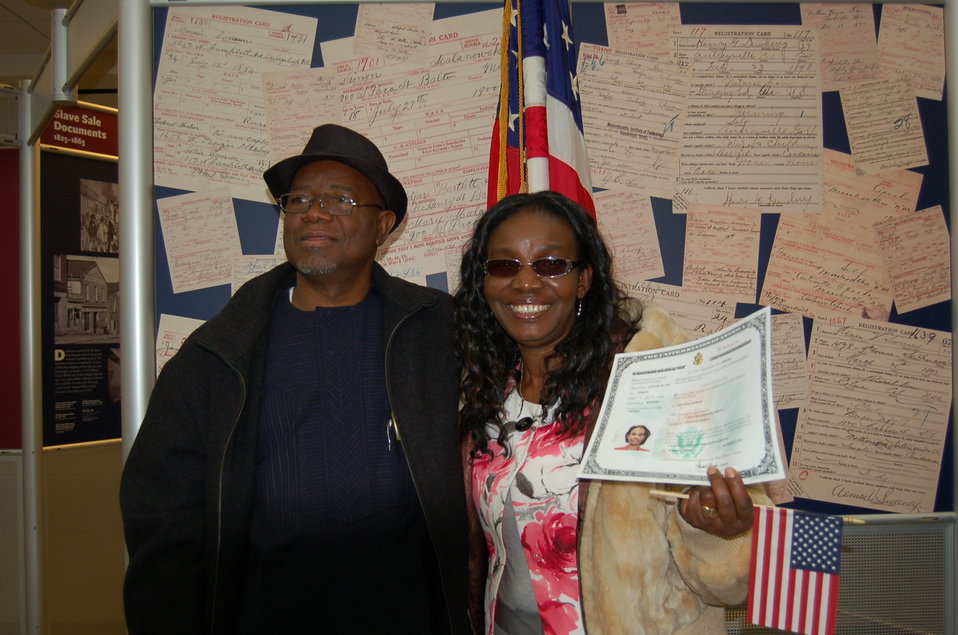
New Citizens